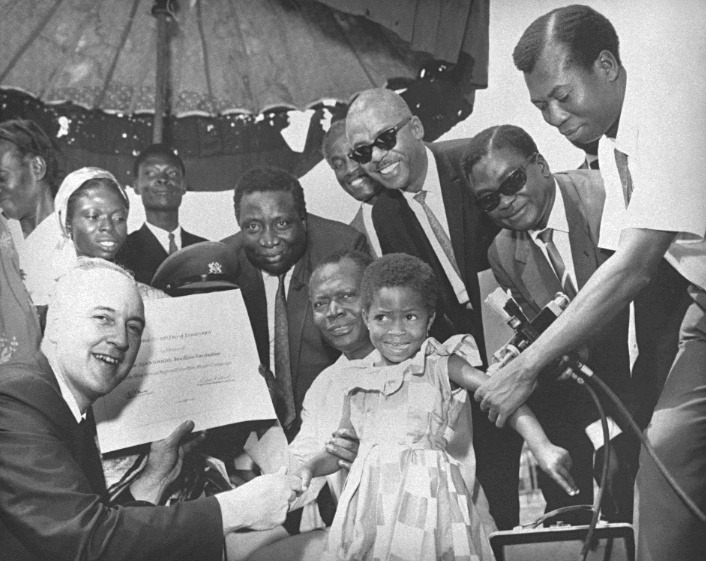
This was the 1968 U.S. Surg. Gen. William Stewart, a former EIS officer (Lt) presenting a certificate to Rebecca Ansah Asamoah.